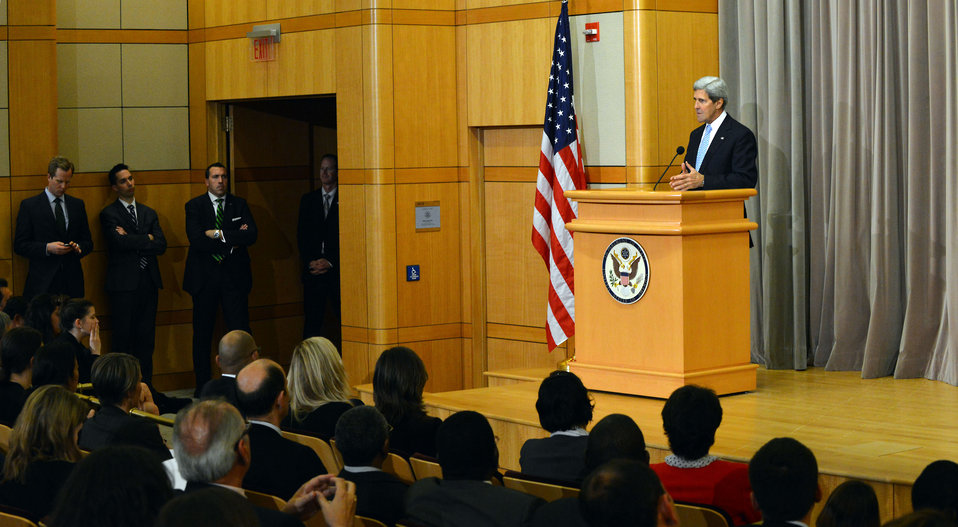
Secretary Kerry Delivers Remarks at the DC Greening Embassies Forum

U.S. Secretary of State John Kerry delivers remarks at the DC Greening Embassies Forum in honor of National Energy Action Month, at the U.S. Department of State in Washington, D.C., on October 29, 2013.